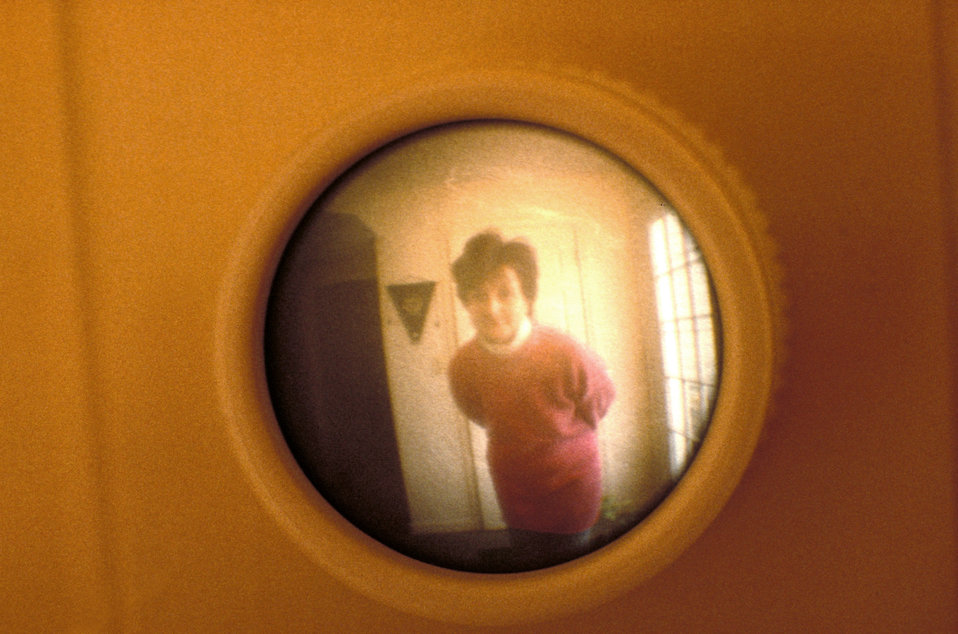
This 1995 photograph depicted a close up view from inside a front door through its very wide, wide-angle peep hole. The image revealed the magnified image of the person on the other side of the door. When installed no higher than 48', this peephole design allowed residents to see through the portal from a distance, and while standing or seated, thereby, accommodating the needs of both tall or short people, as well as those who couldn't get close to the door, or those whose vision precluded them from using the standard smaller peep hole. It projected a larger image that could be seen without pressing one's face against the door. These larger sized peepholes should be installed in doors, which have no adjacent, or nearby side window, that would provide for easier observation by residents.